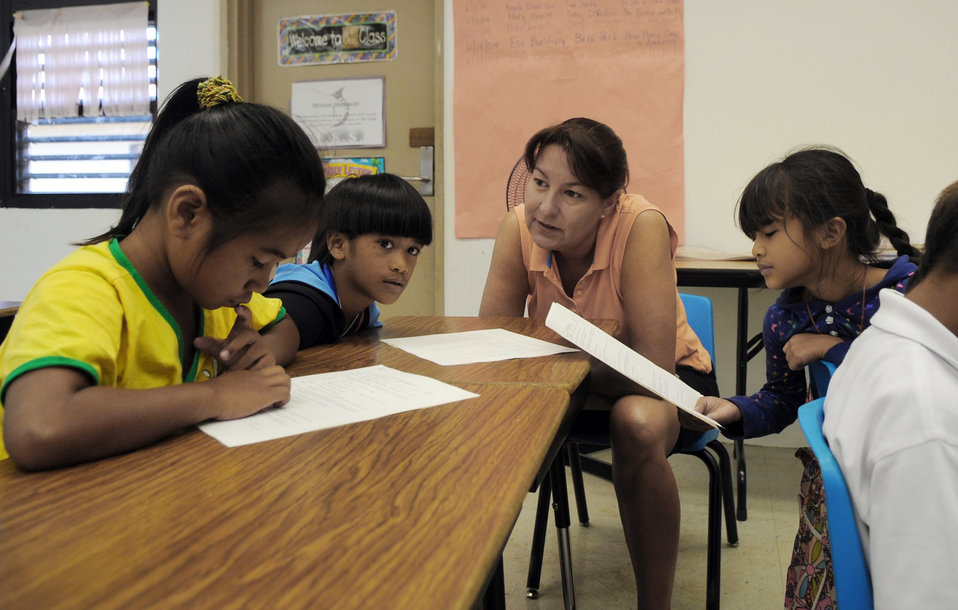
Airmen spend time with students during deployment

Master Sgt. Lisa Robinson reads to second graders June 19 at Machananao Elementary School in Agana, Guam. The Bozeman, Mont., native is deployed to Andersen Air Force Base, Guam, from Elmendorf AFB, Alaska, to support U.S. Pacific Command's continuous bomber presence in the Asia-Pacific Region. Sergeant Robinson is a first sergeant with the 525th Expeditionary Fighter Squadron.